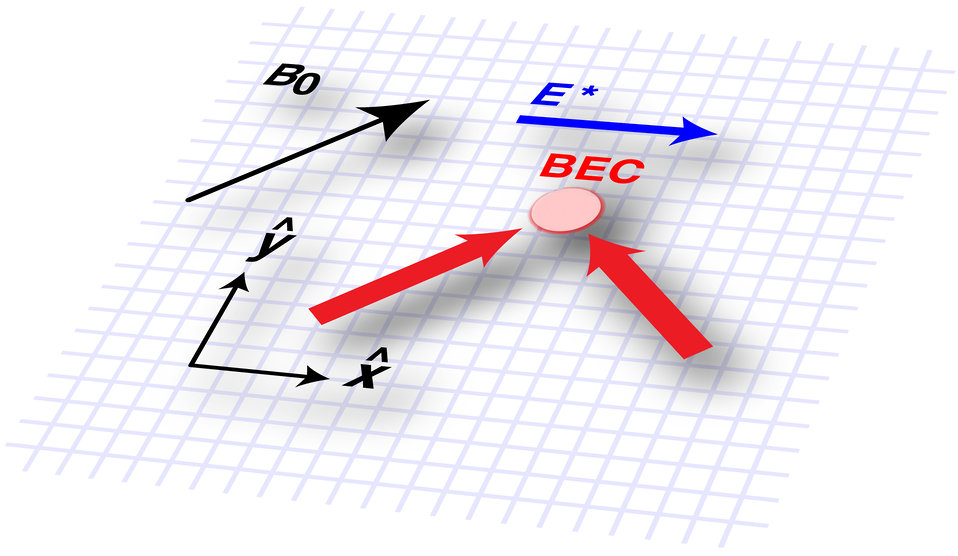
Synthetic electric fields

The researchers create a synthetic electric field (E*) in an ultracold gas of several hundred thousand rubidium atoms (BEC) immersed in a constant magnetic field (B0). Using lasers (red arrows), the team alters the atoms energy-momentum relationship, which causes the atoms to move in a way that is physically identicaland mathematically equivalentto how a charged particle would move in an electric field.